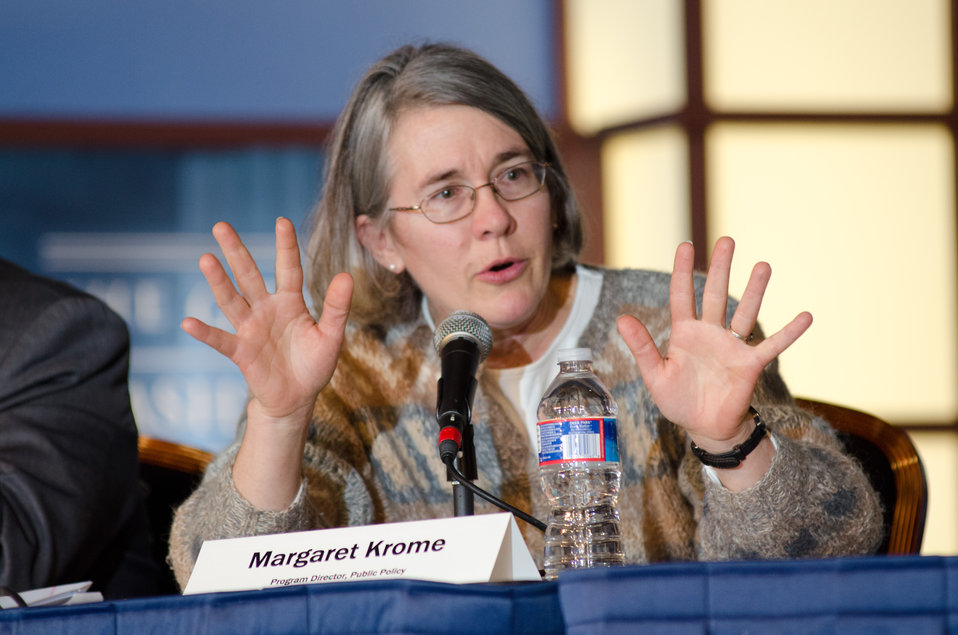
Michael Fields Agricultural Institute Public Policy Program Director Margaret Krome, made opening remarks before a question and answer session during the “Shaping the Farm Bill for a Sustainable Future” Forum in the Jack Morton Auditorium, at the Trachtenberg School of Public Policy and Public Administration, on the George Washington University campus in Washington, D.C., on Thursday, March 1, 2012.